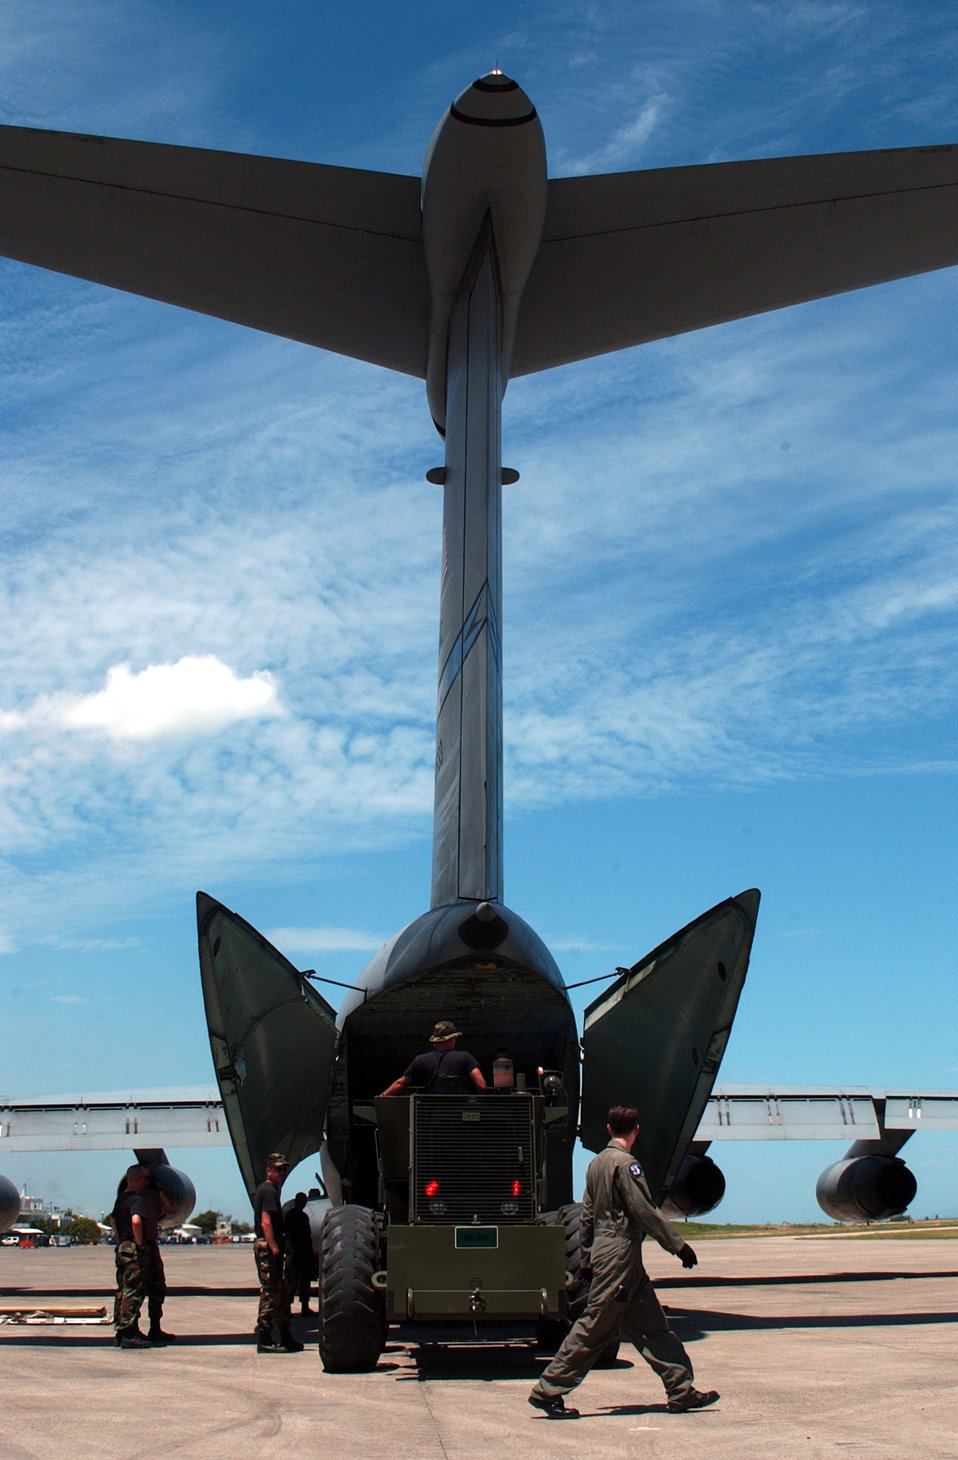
COLD LAKE, Alberta (AFPN) -- Capt. Jon Shaffer checks coordinates for a Maple Flag mission here with Maj. David Drichta (left) as 1st Lt. Zach Bartoe and another aircrewmember listen in. Captain Shaffer and Major Drichta are F-15E Strike Eagle pilots, and Lieutenant Bartoe is a weapons system officer. The Airmen are assigned to the 90th Fighter Squadron at Elmendorf Air Force Base, Alaska.